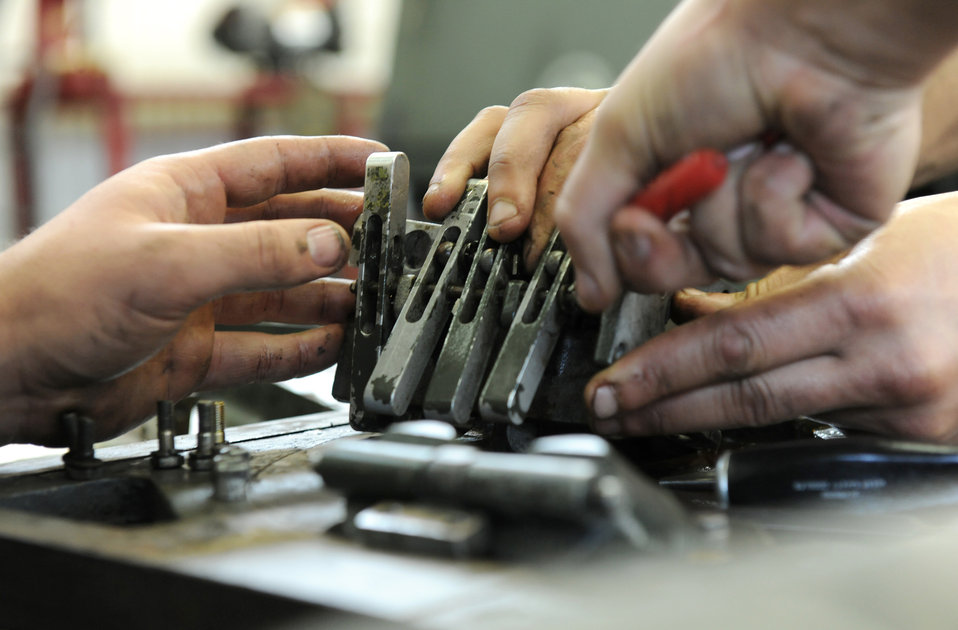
Working on a bomb lift

Aerospace ground equipment journeymen assigned to the 52nd Equipment Maintenance Squadron unscrew bolts holding a directional control valve together on a bomb lift April 7, 2011, at Spangdahlem Air Base, Germany.